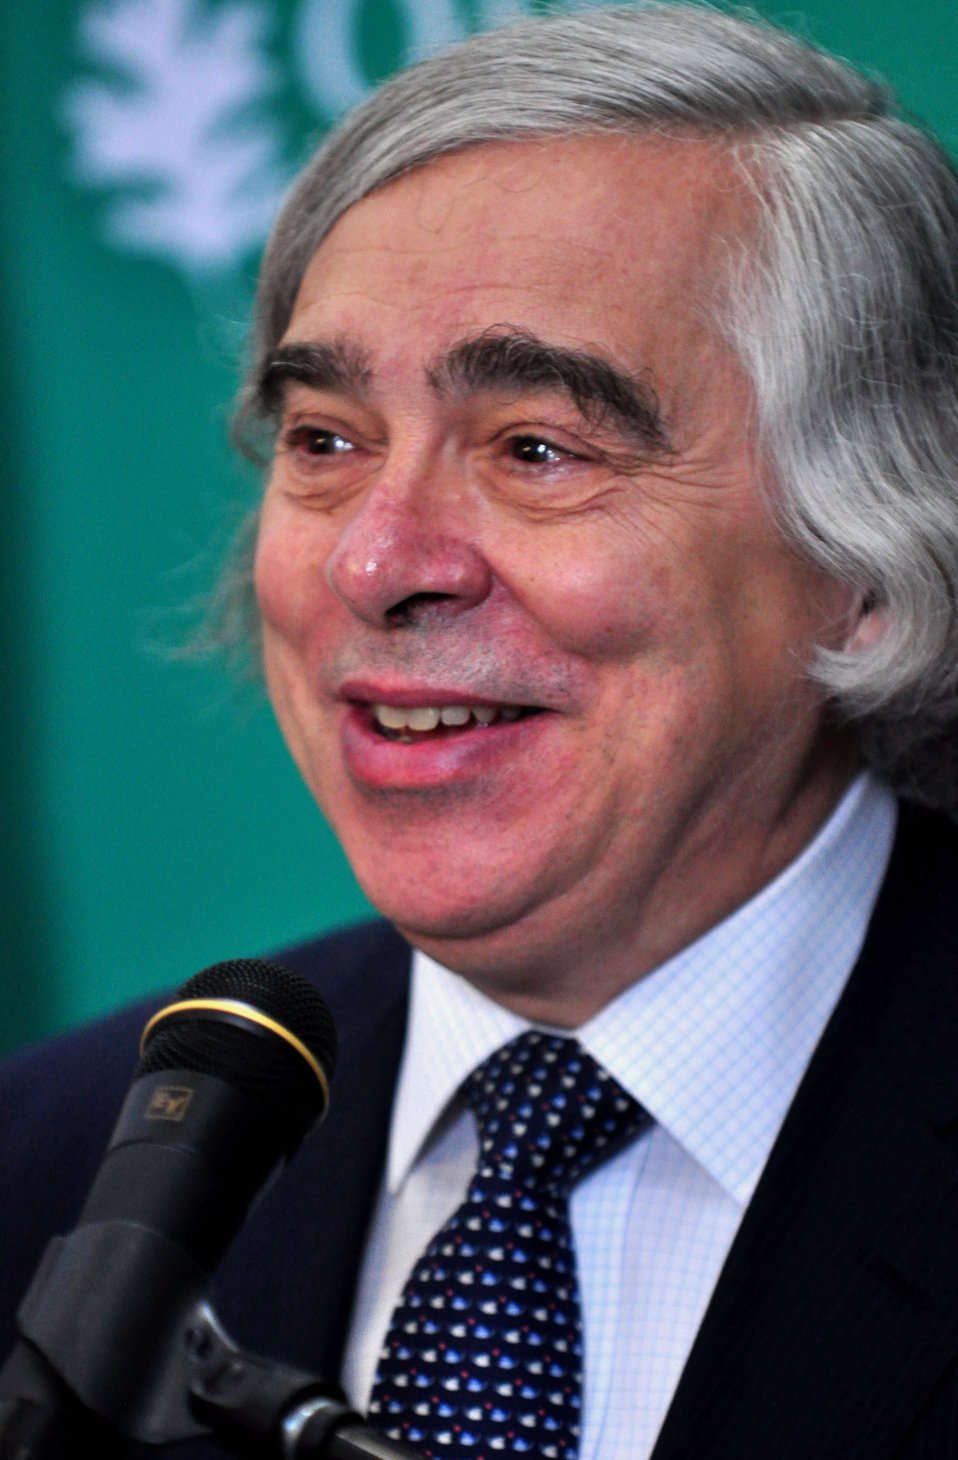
DOE Secretary of Energy Ernest Moniz in Oak Ridge

13-064 DOE photo Lynn Freeny 6-20-2013 Oak Ridge Tennessee